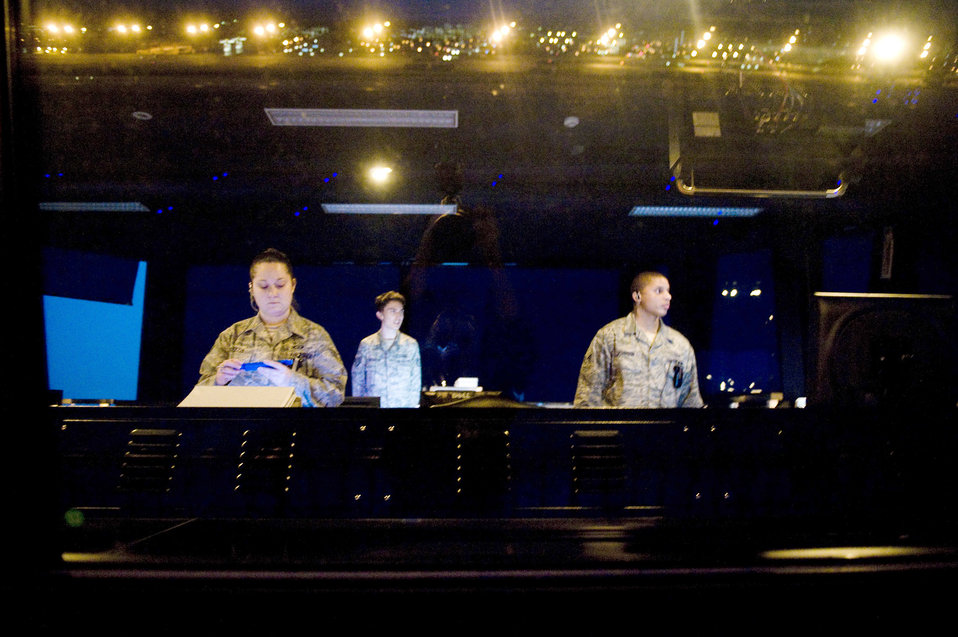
Yokota ATC Operation Tomodachi

Senior Airman Lyndsi Tullos, Staff Sgt. Steven Valentine and Senior Airman Nissean Johnson maintain control of inbound and outbound aircraft March 24, 2011, at Yokota Air Base, Japan. Yokota AB's flightline has received more than triple the normal amount of aircraft due to Operation Tomodachi. The military and civilian aircraft have been from multiple nations carrying supplies, personnel and equipment in direct support of bringing relief efforts and trying to minimize human suffering following an earthquake and tsunami March 11. Sergeant Valentine and Airmen Tullos and Johnson are 374th Operations Support Squadron air traffic controllers.